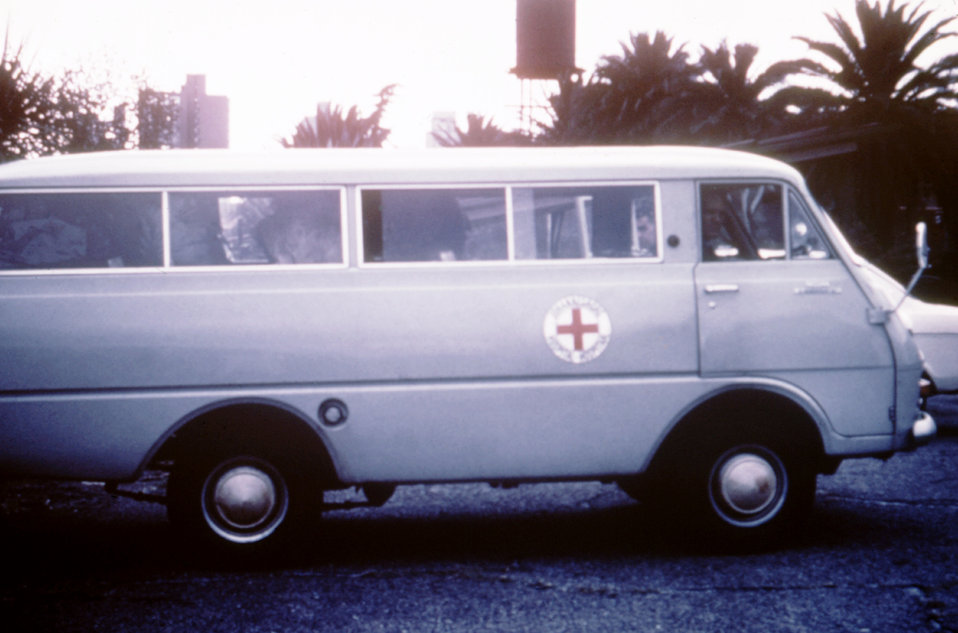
This photograph showed a Red Cross van in Johannesburg, South Africa during the Marburg outbreak of 1975.